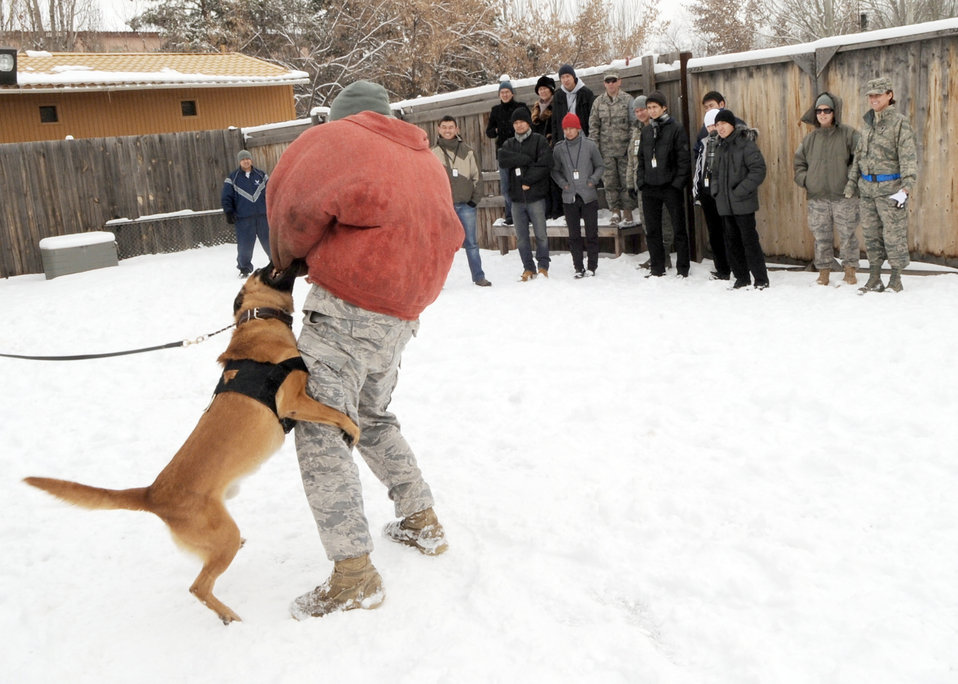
Kyrgyz community tour Transit Center at Manas

376th Expeditionary Security Forces Squadron military working dog handlers put on a demonstration of how their military working dog, Eric, performs his duties Feb. 6, 2010, during a National Democratic Institute of Kyrgyzstan tour of the Transit Center at Manas. Members of the NDI visited to get a better idea of the operations U.S. and coalition forces conduct here.